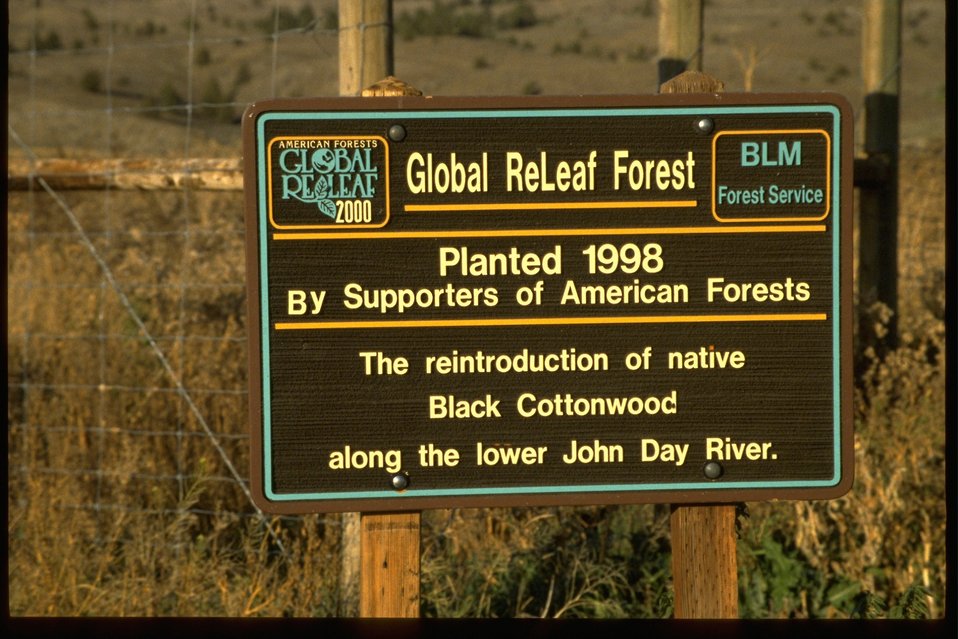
Global ReLeaf Forest" sign along the John Day River.